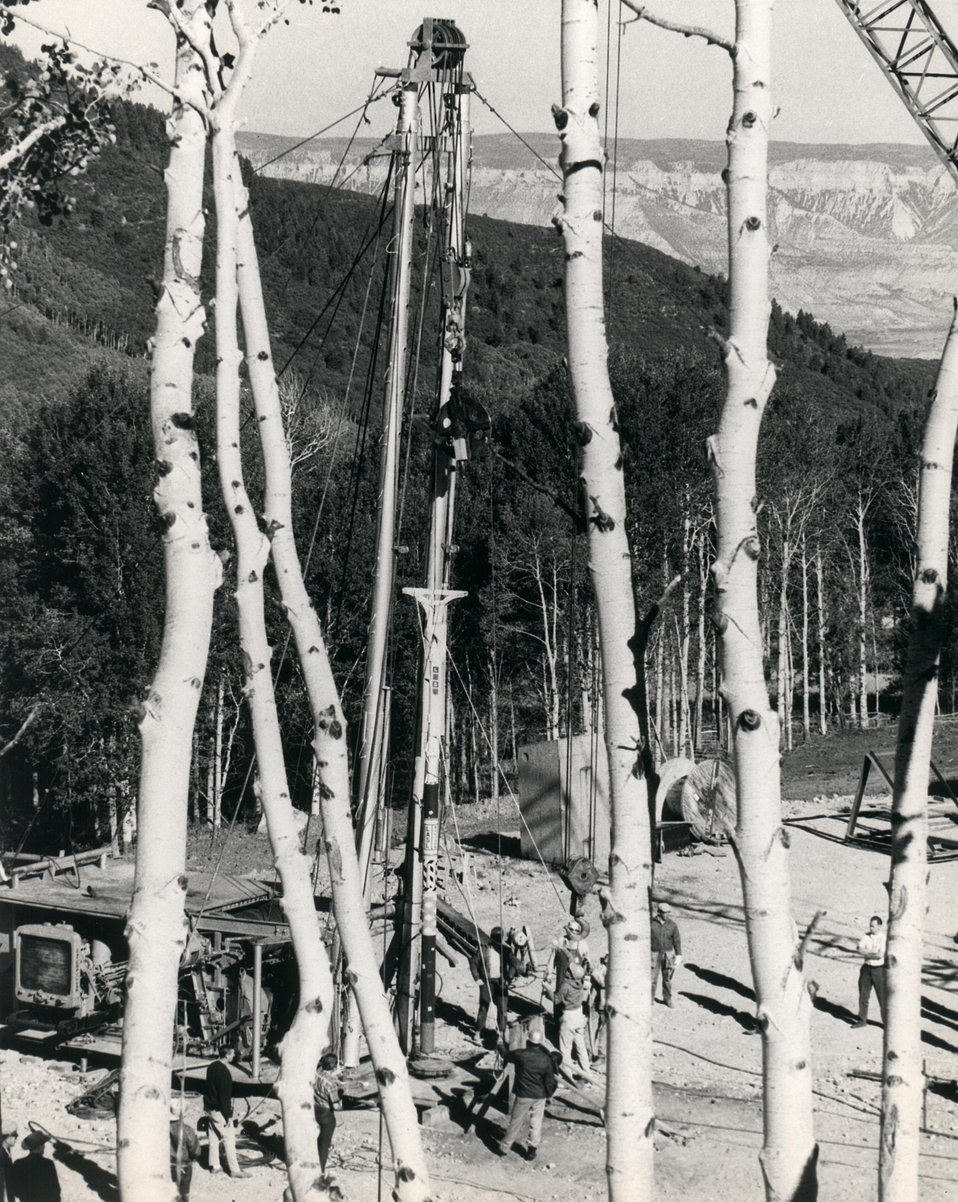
The Project Rulison 40-kilometer nuclear device is lowered into its 8,442-foot deep emplacement hole on August 14, 1969. Circa 1969.